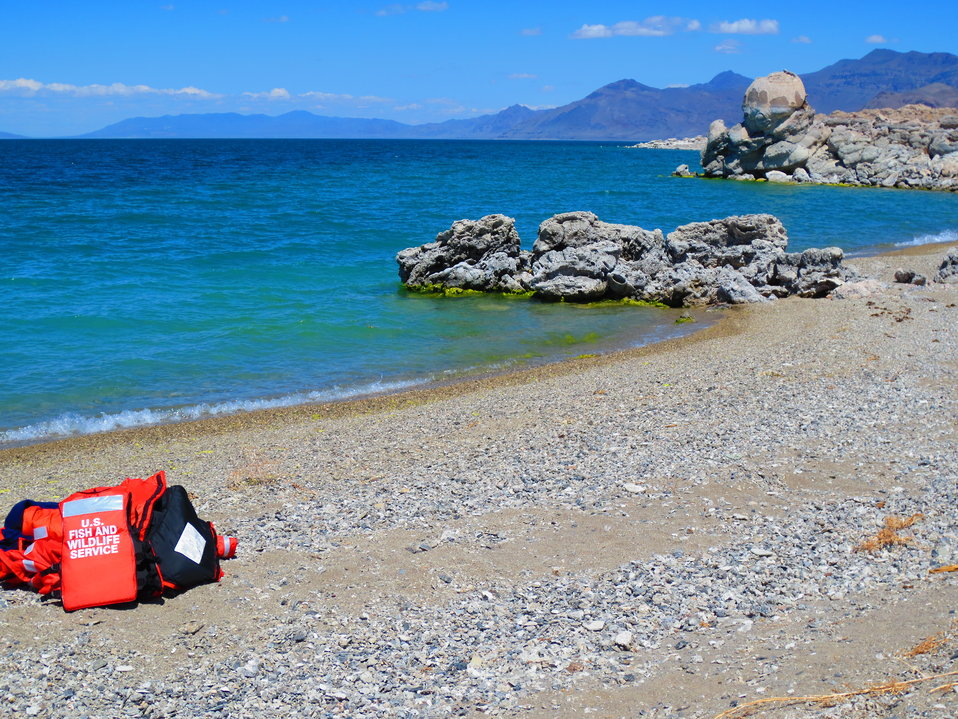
West shore of Anaho Island NWR

U.S. Fish and Wildlife Service staff visit Anaho Island NWR regularly to monitor bird nests and populations.